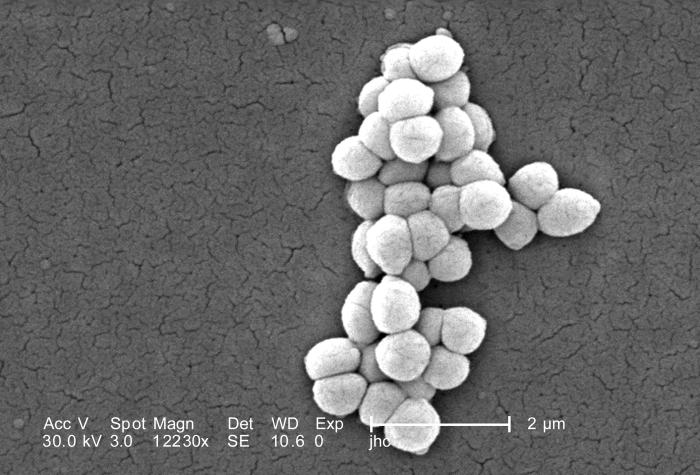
Under a high magnification of 12230x, this scanning electron micrograph (SEM) depicted some of the ultrastructural morphologic features displayed by this group of Gram-positive Micrococcus luteus bacteria. The specimen was obtained from a pure culture that was raised on a polycarbonate filter, for the purpose of identification of the organism.